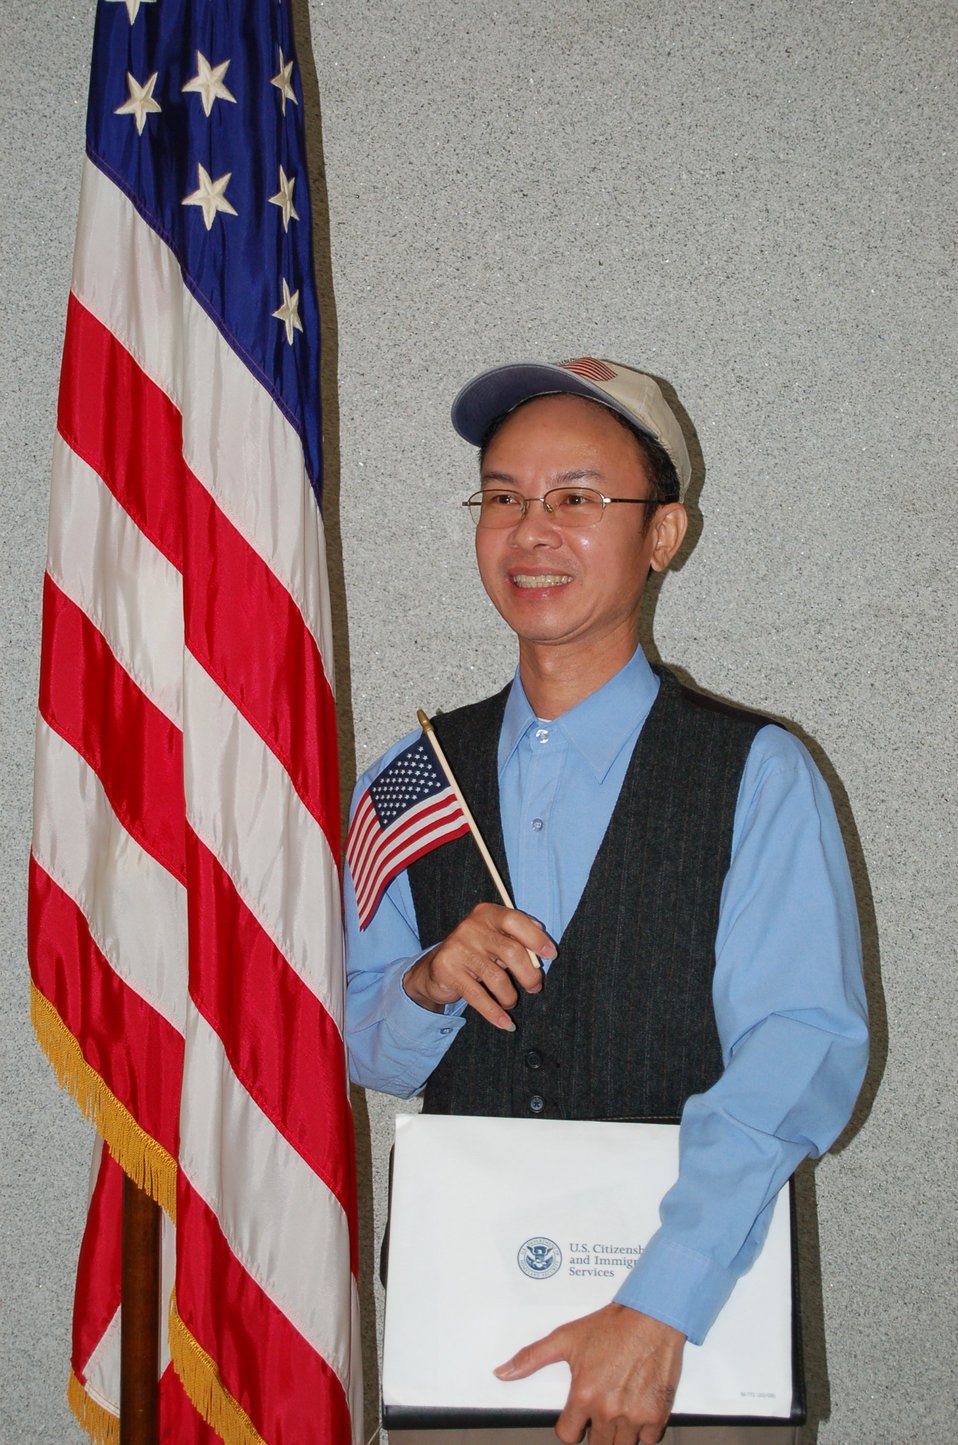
New Citizens